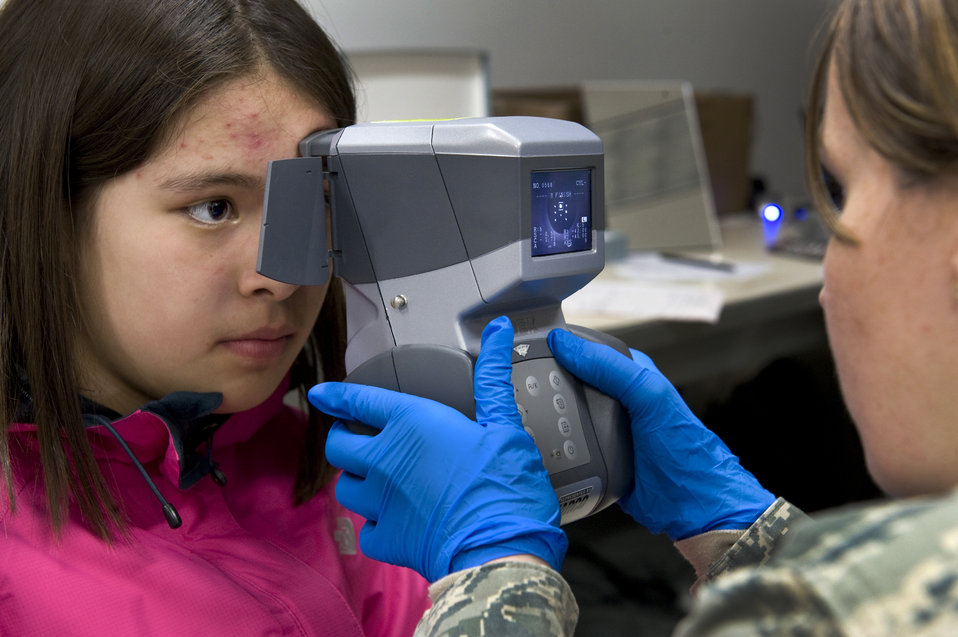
New Vision

Tech. Sgt. Christy Shortridge uses an auto refractor to determine the eye-glass prescription for 11-year-old Zara Norton during Operation Arctic Care April 12, 2010, in Kotzebue, Alaska. Sergeant Shortridge is an ophthalmic technician deployed from the 440th Medical Squadron at Pope Air Force Base, N.C.